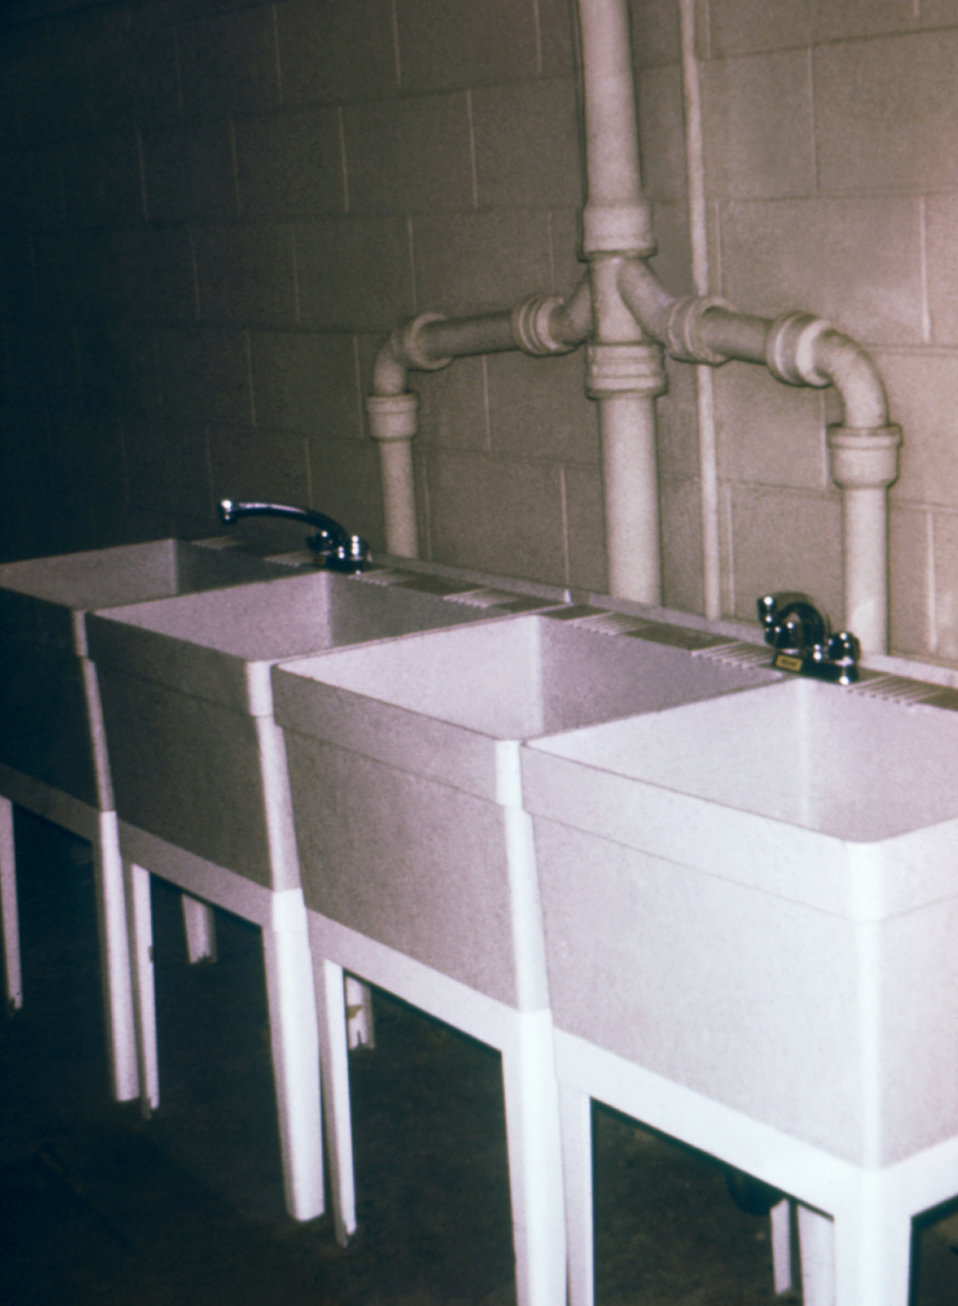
These laundry tubs are an example of proper water supply conditions because the faucets are placed above the water spill rims.